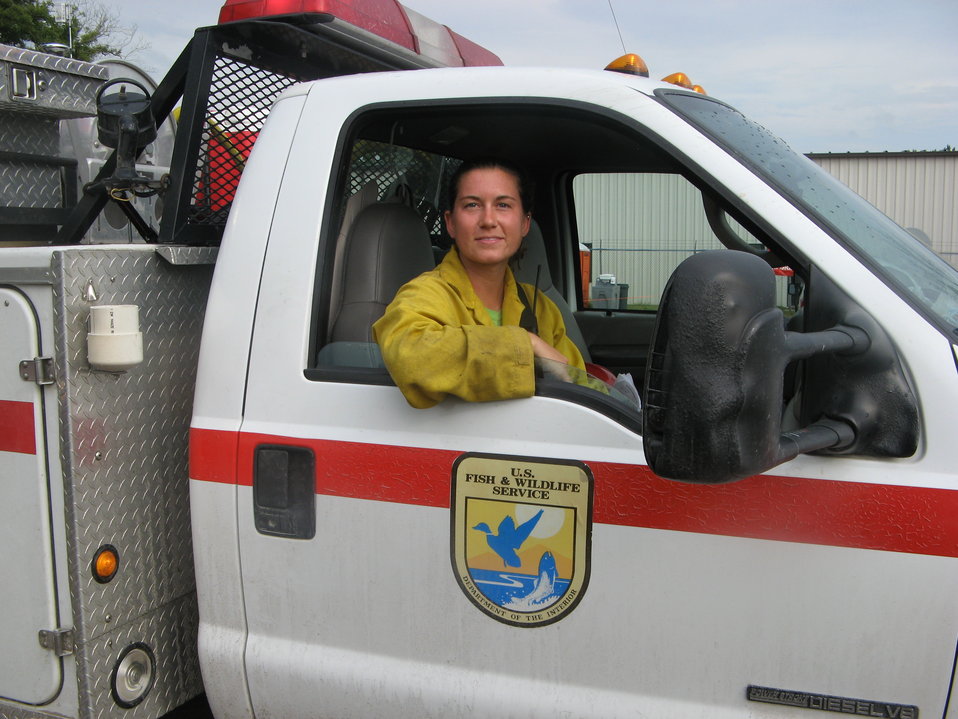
AmeriCorps NCCC firefighter

Suffolk, VA, August 2011: Chelsea Hurst, a member of the Phoenix 3 AmeriCorps National Civilian Community Corps, worked on the Lateral West Fire on Great Dismal Swamp National Wildlife Refuge. Hurst is in a fire engine from Wallkill River National Wildlife Refuge in New Jersey.